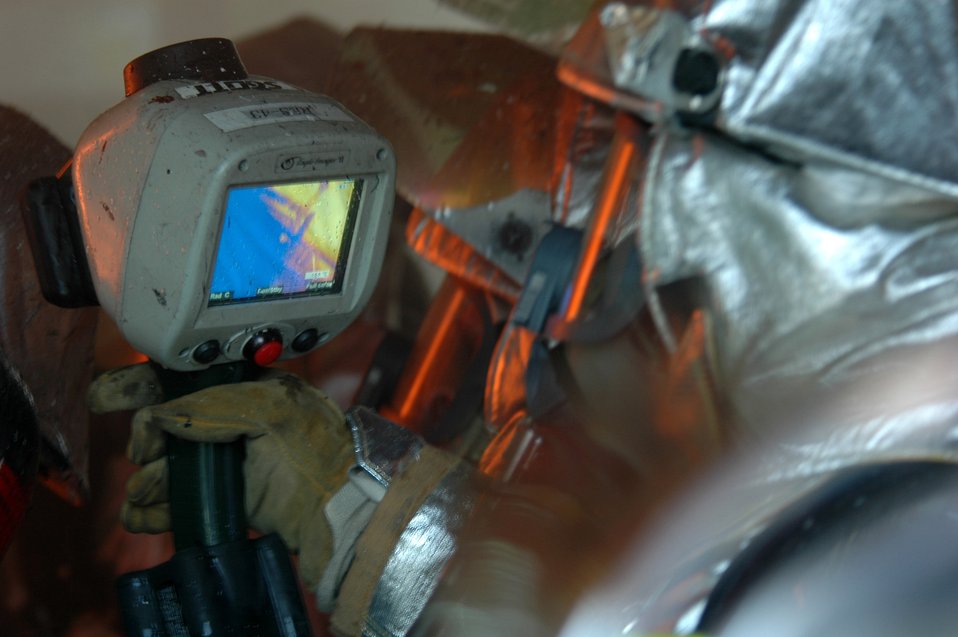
Air Force firefighters fuel flames for live fire training

A firefighter uses a thermal imaging camera to see through the smoke June 20 to find where the hot spots are in a fire and to keep track of the crew inside a condemned housing unit on Eglin Air Force Base, Fla. For realistic fire training purposes, the 96th Civil Engineer Squadron Fire Department was permitted to set fires in three housing units set for demolition as part of Eglin's housing privatization initiative.